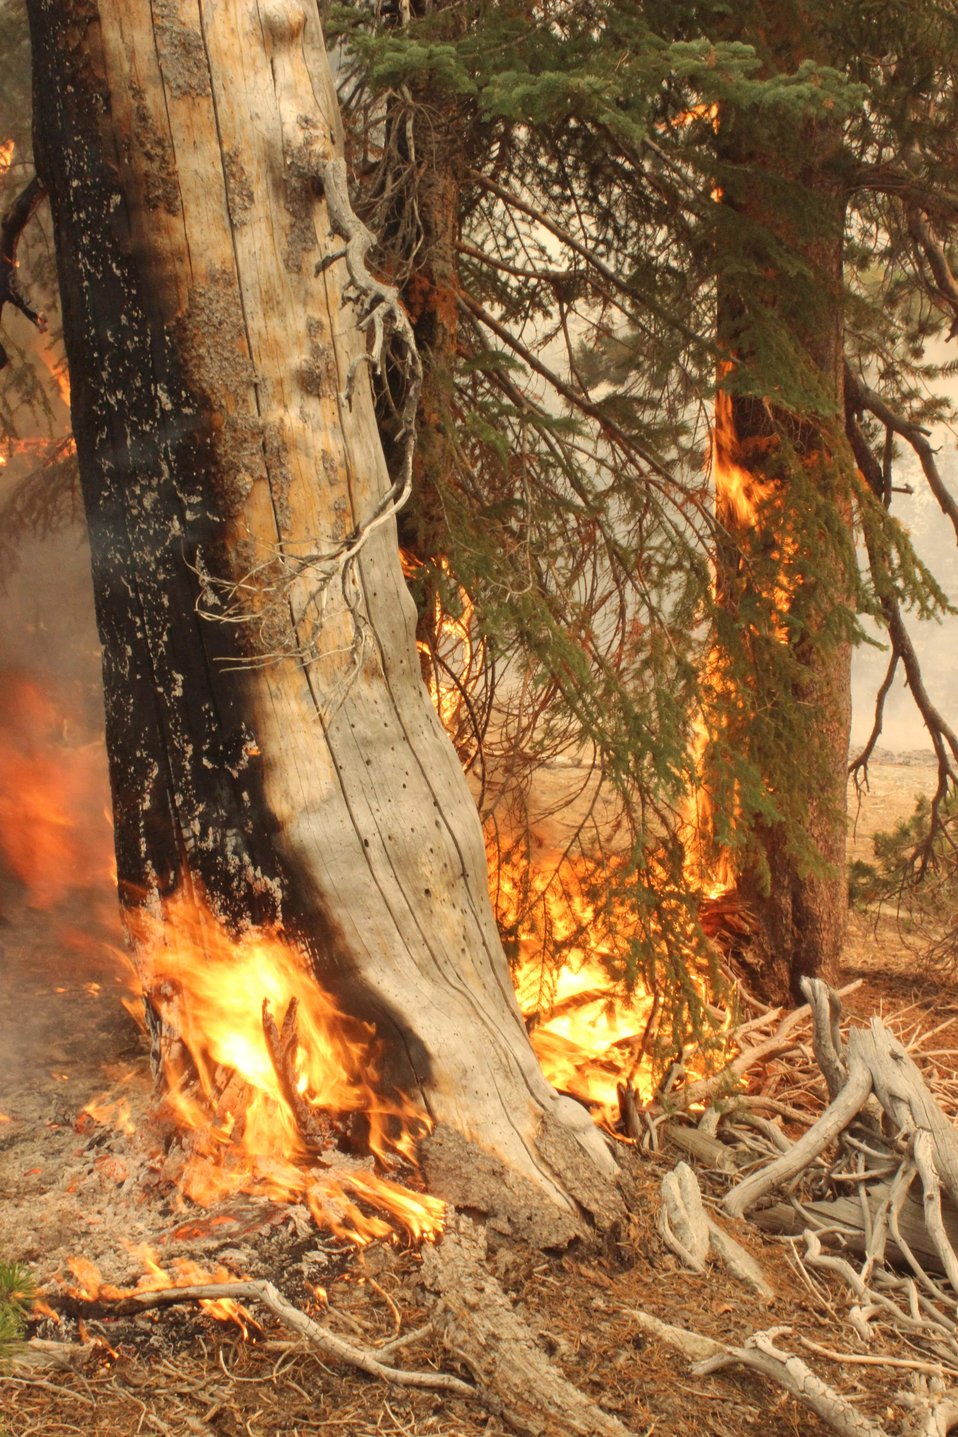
The Rim Fire in the Stanislaus National Forest near in California began on Aug. 17, 2013 and is under investigation. The fire has consumed approximately 256,169 acres and is 84% contained.